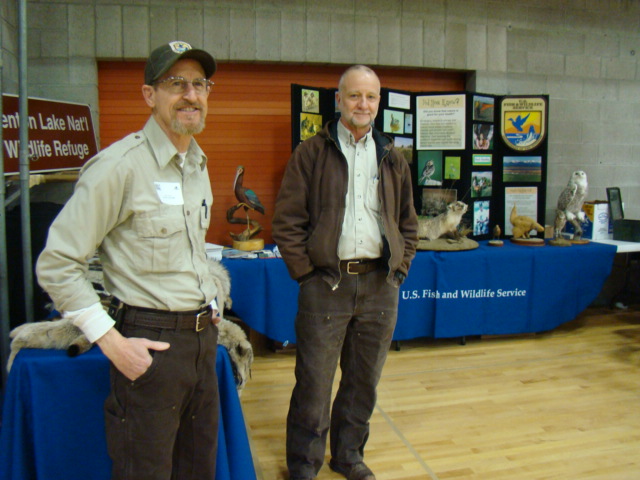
Great Falls STEM Expo

Every spring Benton Lake NWR participates in the Great Falls STEM (Science, Technology, Engineering, Math) Expo. We set up a booth complete with pictures, furs, skulls, animals, and even a duck banding station!